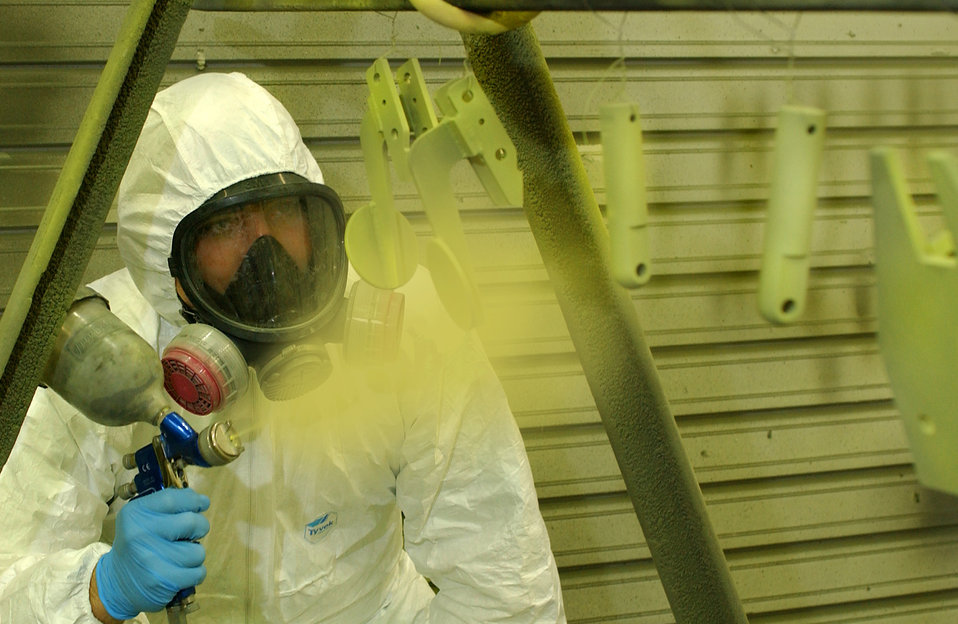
Spray and bake

ROYAL AIR FORCE MILDENHALL, England -- Staff Sgt. Corey Wright sprays primer onto MC-130 Combat Talon II brake parts. The three-part process bakes paint and primer onto parts. Sergeant Wright is an aircraft structural maintainer on temporary duty here from Fairchild Air Force Base, Wash.